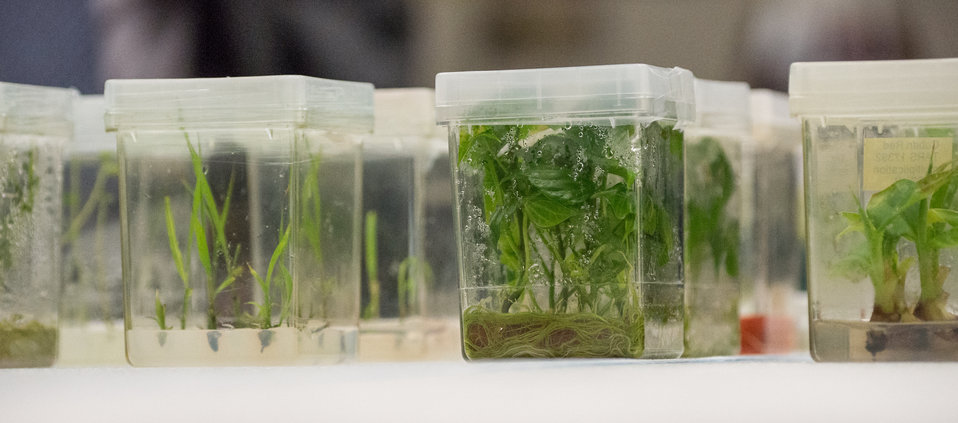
Plant tissue cultures grow at the U.S. Department of Agriculture’s (USDA) Agriculture Research Service (ARS) National Center for Genetic Resources Preservation (NCGRP) Tissue Culture Preparation Laboratory in Ft. Collins, CO on Wednesday, Nov. 6, 2013. NCGRP is the largest agricultural gene bank facility in the United States, and one of the largest in the world. NCGRP is the largest agricultural gene bank facility in the U.S. The NCGRP staff conducts groundbreaking research to develop more efficient and effective means for preserving plant and animal germplasm, and for better understanding the genetic structure of these invaluable materials. The research findings, preservation techniques, and specialized technology developed by the NCGRP have been adopted by gene banks around the world: many international scientists travel to the NCGRP for research and training.